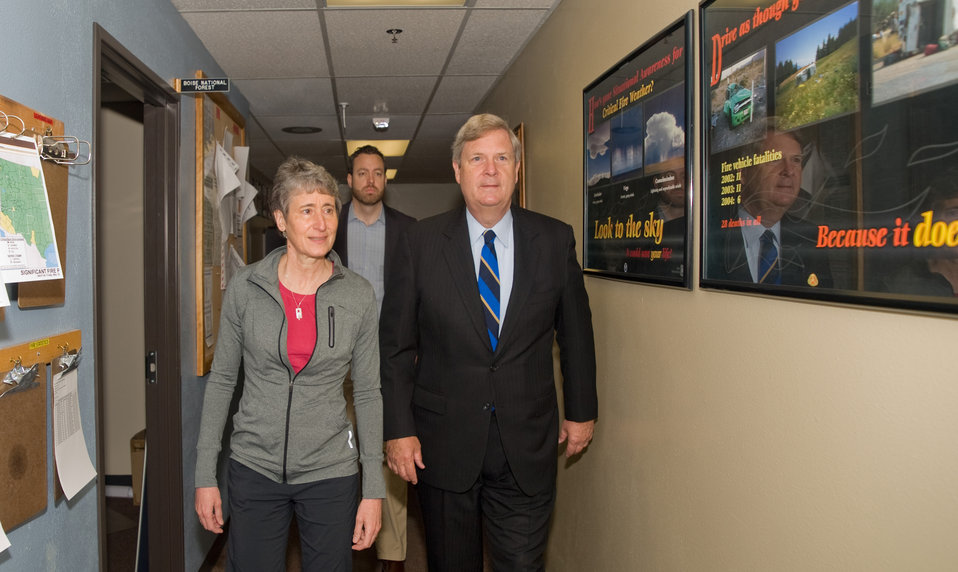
Interior Secretary Sally Jewell Agriculture Secretary Tom Vilsack tour the National Interagency Fire Center (NIFC) in Boise, ID on Monday, May 13, 2013. Agriculture Secretary Vilsack and Interior Secretary Jewell provided an outlook for the upcoming fire season and outlined the federal government’s efforts to ensure collaboration in protecting Americans from wildfire.